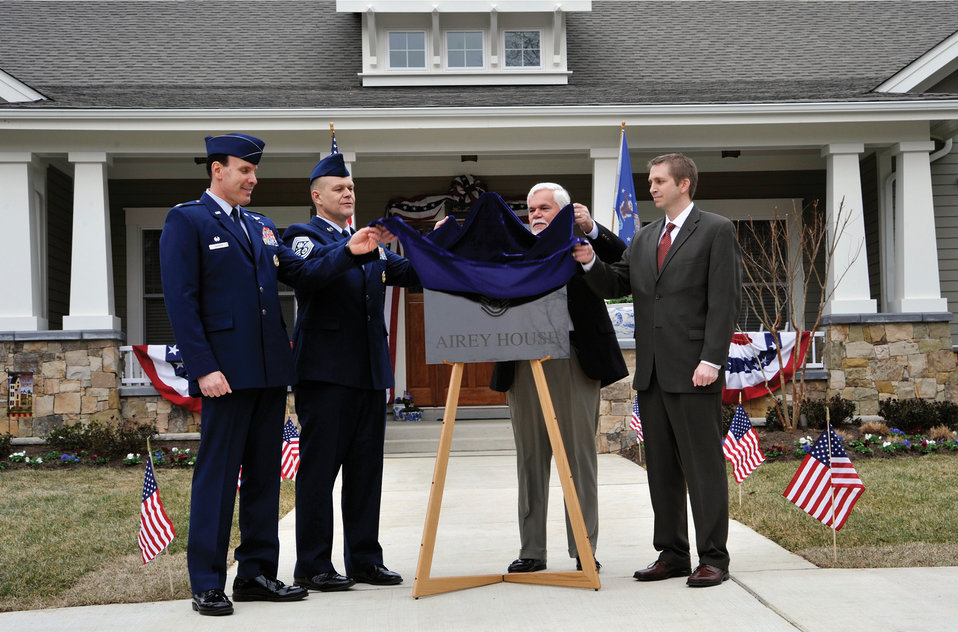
CMSAF dedication

Colonel Steven Shepro (from left), Joint Base Andrews and 316th Wing commander; Chief Master Sgt. of the Air Force James A. Roy; retired Chief Master Sgt. Dale Airey; and Mike Dowling, a representative of Clark Realty, unveil a plaque during a dedication ceremony March 10, 2010, at 1 Airey Court, Joint Base Andrews, Md. The chief master sergeant of the Air Force's new quarters, now